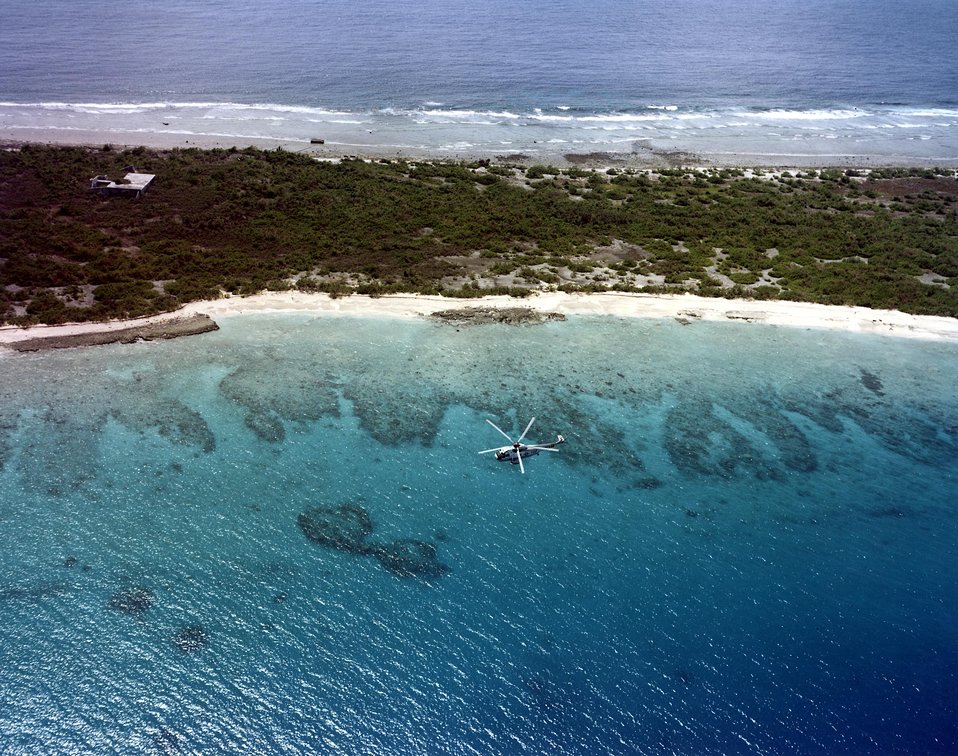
Aerial radiation survey of Bikini Atoll.
11-15-78